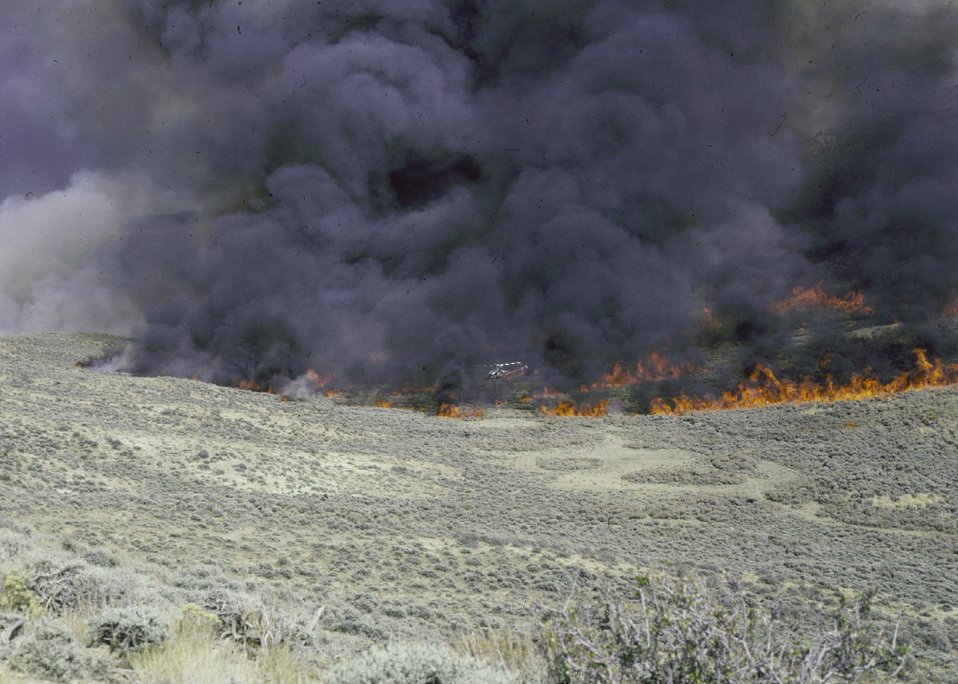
A prescribed fire in the Southwest Zone.